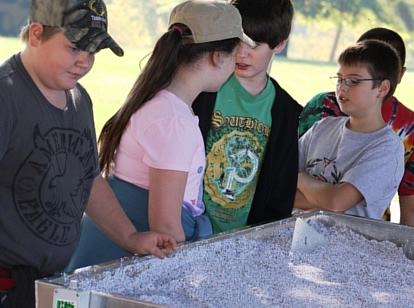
Student at Virginia Farm Field Days

Sixth grade students participating in a demonstration at Virginia Farm Field Days.